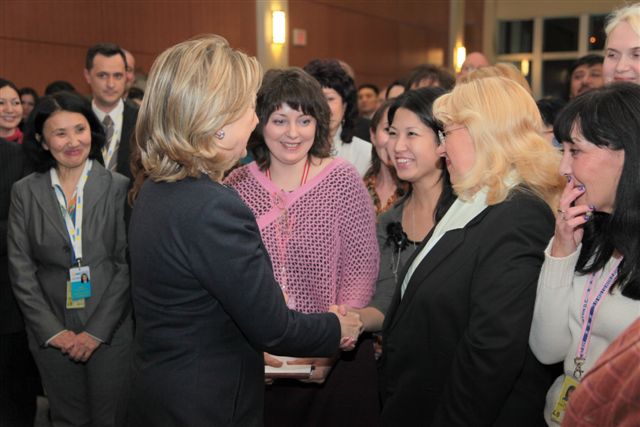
Secretary Clinton Greets Members of the U.S. Embassy Astana Staff and Their Families

U.S. Secretary of State Hillary Rodham Clinton greets members of the U.S. Embassy Astana staff and their families in Astana, Kazakhstan, on December 1, 2010.